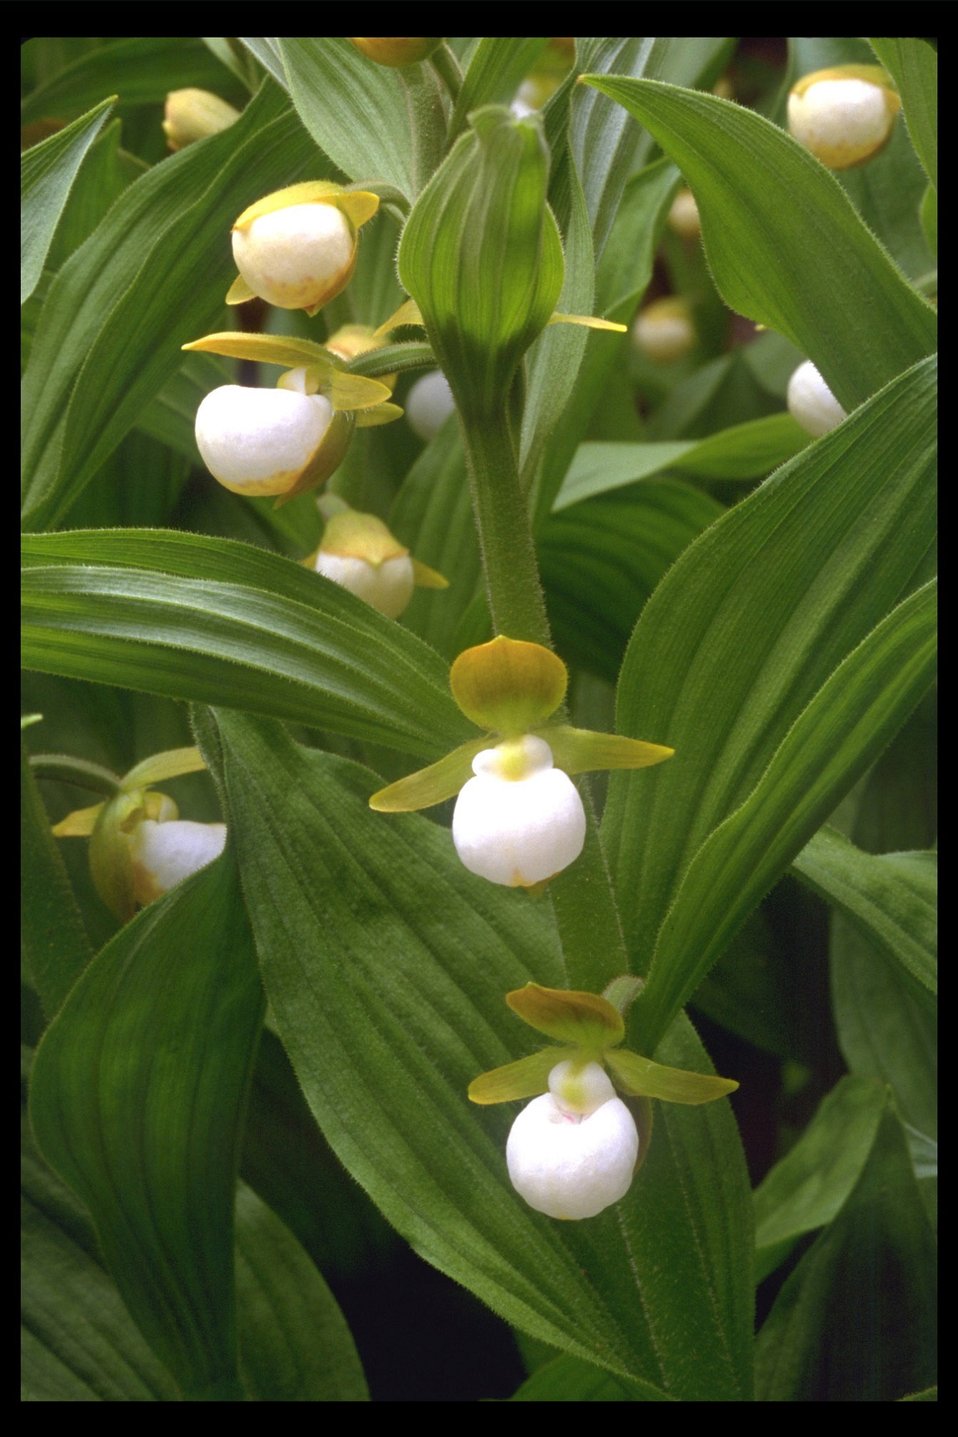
California Lady's Slipper Orchid (Cypripedium californicum) near Goolaway Gap.